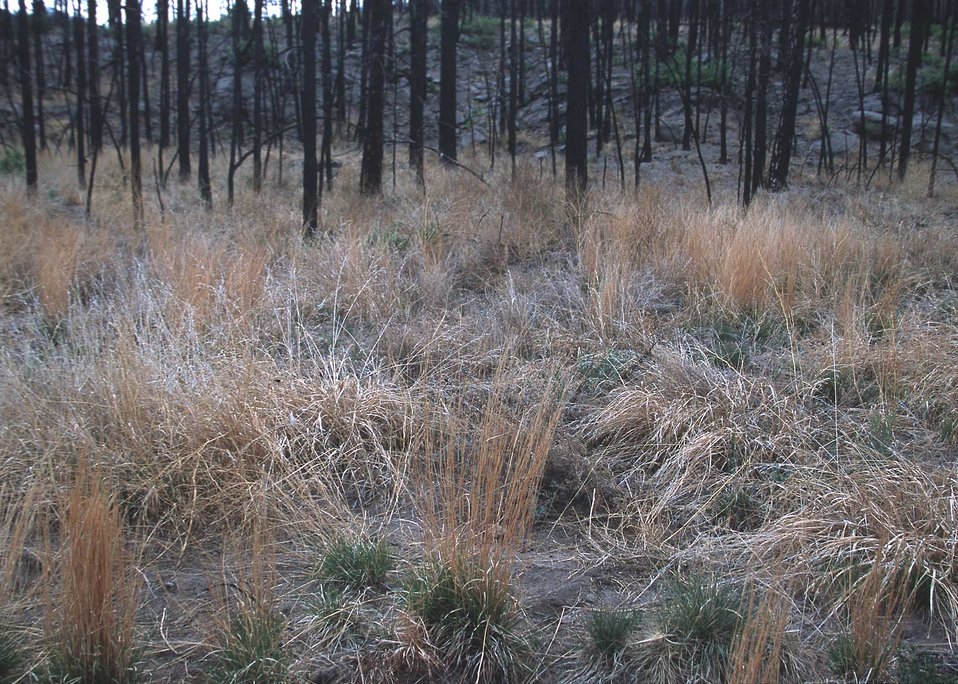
First years growth of emergency reseeding after the Los Alamos fires. Some of the species planted for erosion control and habitat improvement were prairie junegrass, slender wheatgrass, mountain brome, three awn, gambel's oak, and mountain mahogany.